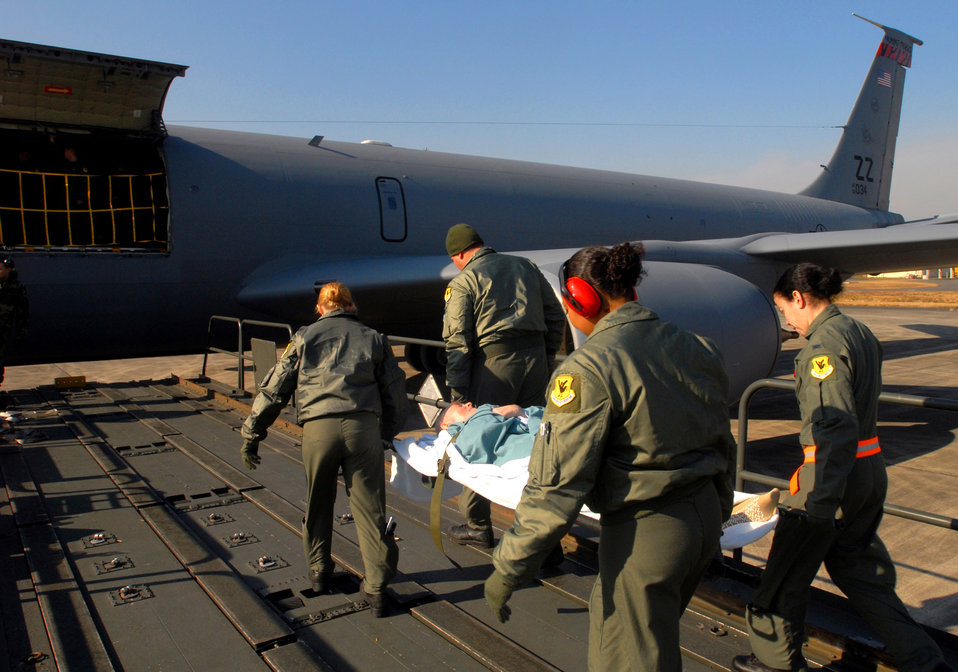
Kadena Airmen aerovac patients in need

Airmen from the 18th Aeromedical Evacuation Squadron carry a patient onto a KC-135 Stratotanker Dec. 18 at Yokota Air Base, Japan, and bound for Kadena AB, Japan. The patient will stay at the Camp Lester Naval Hospital for the night to receive critical care before being transported to Travis Air Force Base, Calif., for further treatment. Members of the 18th AES travel throughout the Pacific picking up critical patients and transporting them to hospitals that can meet their needs.